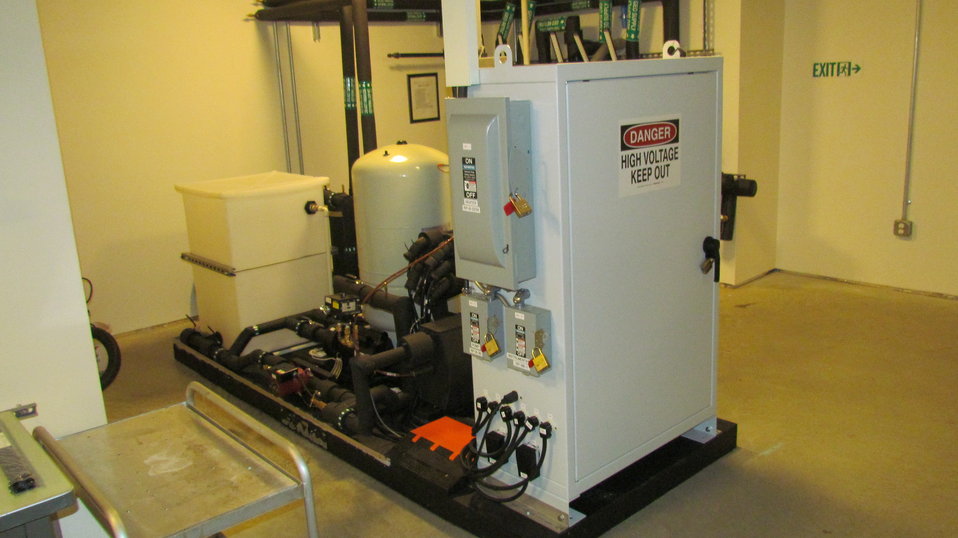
Thermal response tester used to measure the effectiveness of NZERTF’s three geothermal loops.